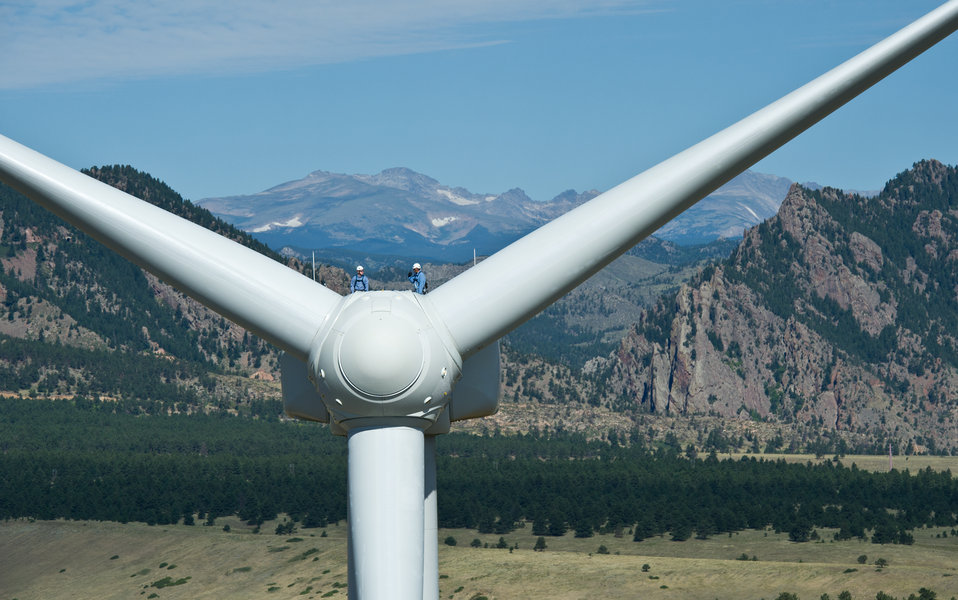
Aerial view of the National Wind Technology Center at National Renewable Energy Laboratory.